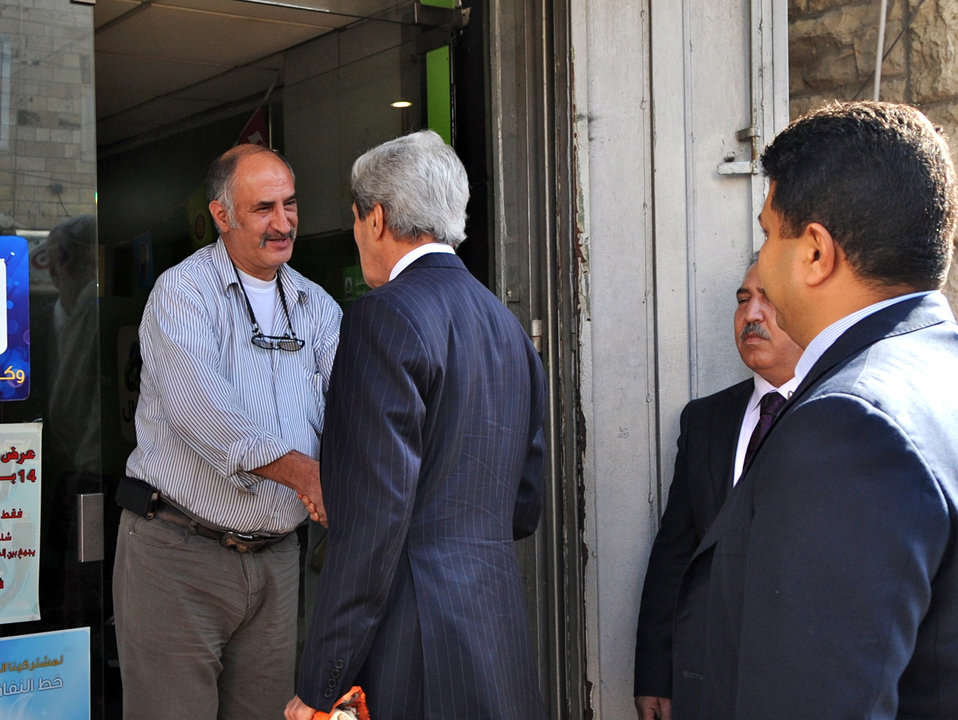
Secretary Kerry Greets a Shopkeeper in Ramallah

U.S. Secretary of State John Kerry greets a shopkeeper in Ramallah on May 23, 2013.